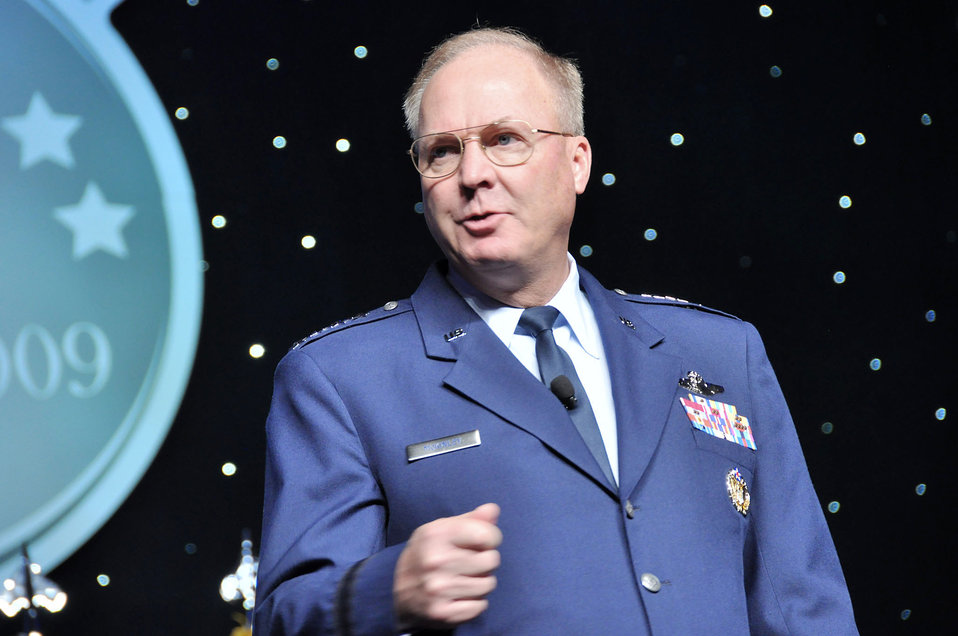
Guard leaders meet to 'add value to America'

Gen. Craig R. McKinley addresses Army and Air National Guard senior servicemembers from across the nation Nov. 19, 2009, at the National Harbor outside Washington, D.C. General McKinley is the chief of the National Guard Bureau.